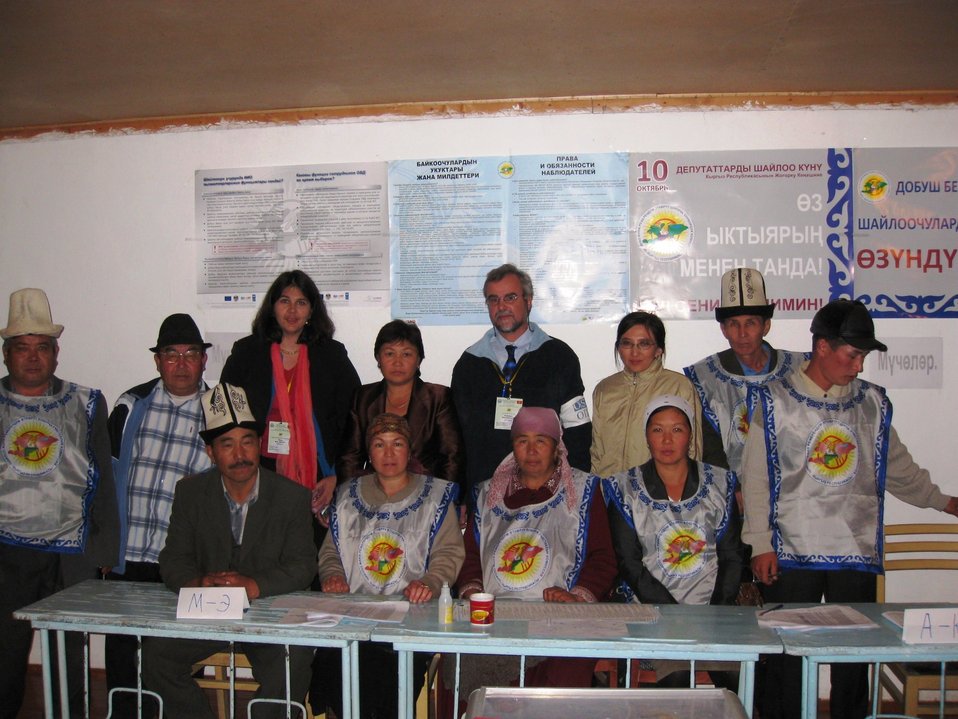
U.S. Embassy Bishkek Officers Pose for a Photo With Kyrgyz Election Volunteers

Foreign Service Officers from U.S. Embassy Bishkek spend time with Kyrgyz election volunteers in Kyrgyzstan in October 2010.